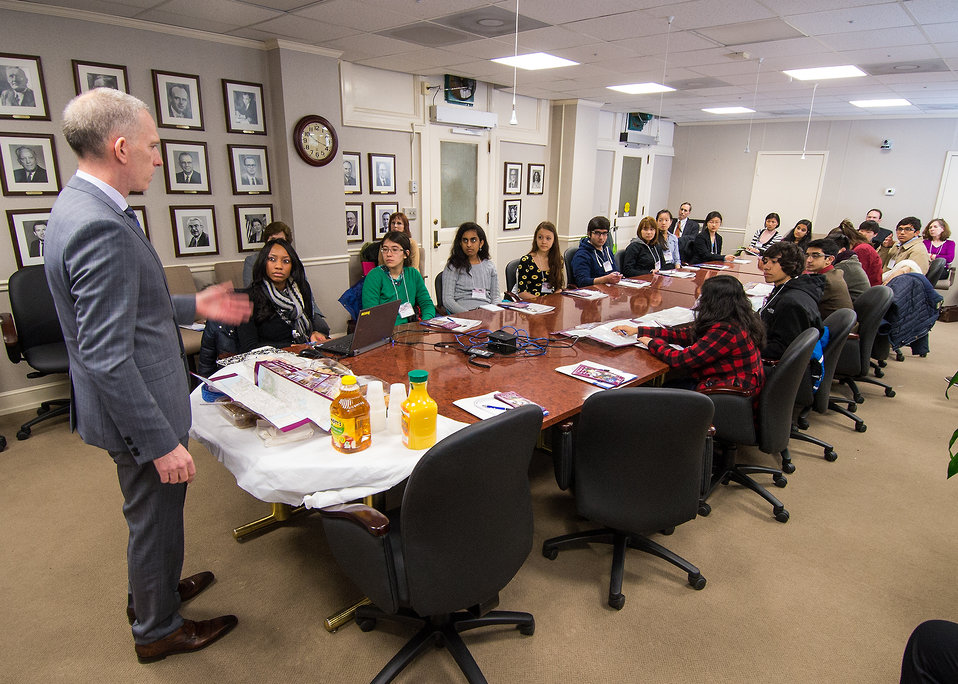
From left: Doug Nash, Forest Service, Chief Information Officer, Shirley Burt, Teja Sathi, Nicola Kubzdela, Kashish Jagger, Thai Le, Jennifer Song, Ai Mochida, Bhavana Channavajjaler, Kevin Xu, Rushi Patel, Shani Cave, Leon Kim, Salman Guliwala, Jason Thomas and Vooha Putalapattu students from Thomas Jefferson High School of Science and Technology in Alexandria, VA. Nash discussed the Forest Service Fire Mission Resource Ordering and Status System (ROSS) during the U.S. Department of Agriculture (USDA), Office of the Chief Information Officer (OCIO) IT Job Shadow Day, Tuesday Mar. 25, 2014. The OCIO IT Job Shadow Day hosts students from local high schools in the Washington, D.C. area annually with IT professionals and agricultural specialists from a variety of mission areas at USDA.